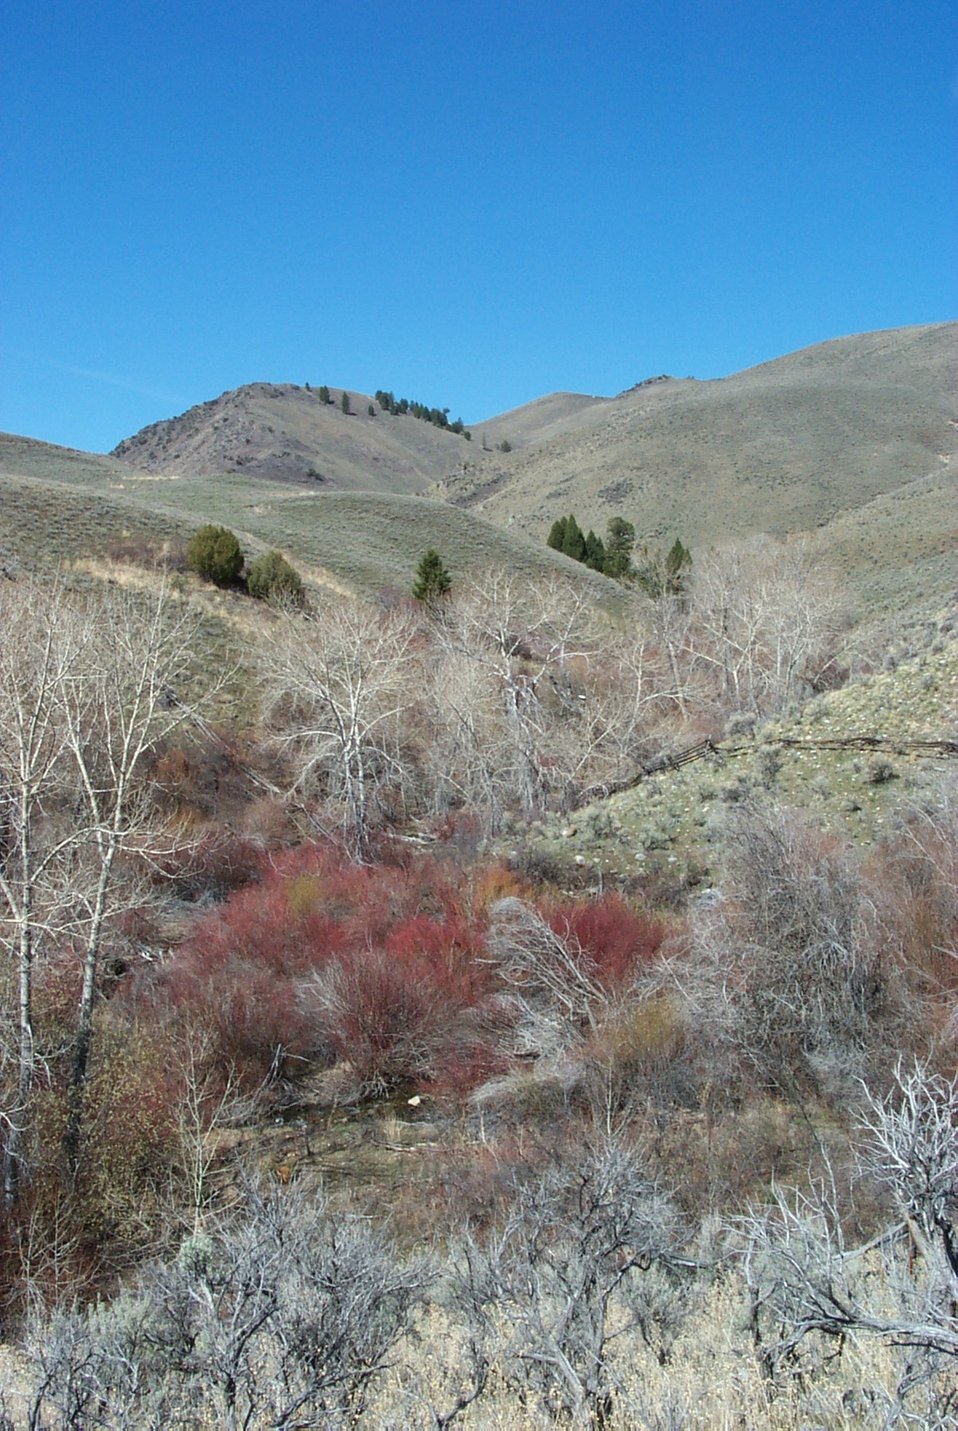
Salmon Field Office Realty Public access Exchange UCSC Upper Columbia Salmon Clearwater District